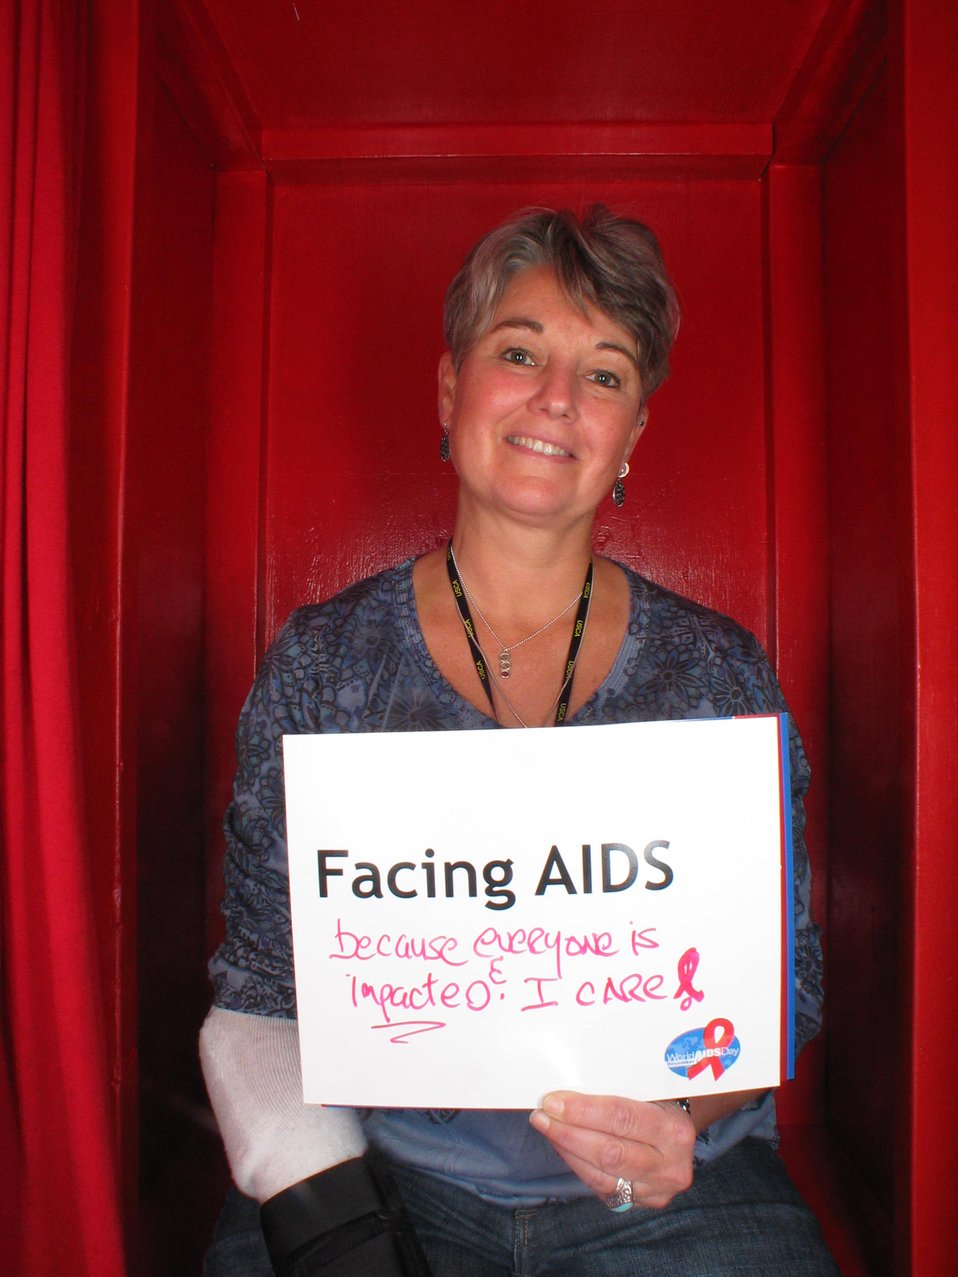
Facing AIDS because everyone is impacted and I care.